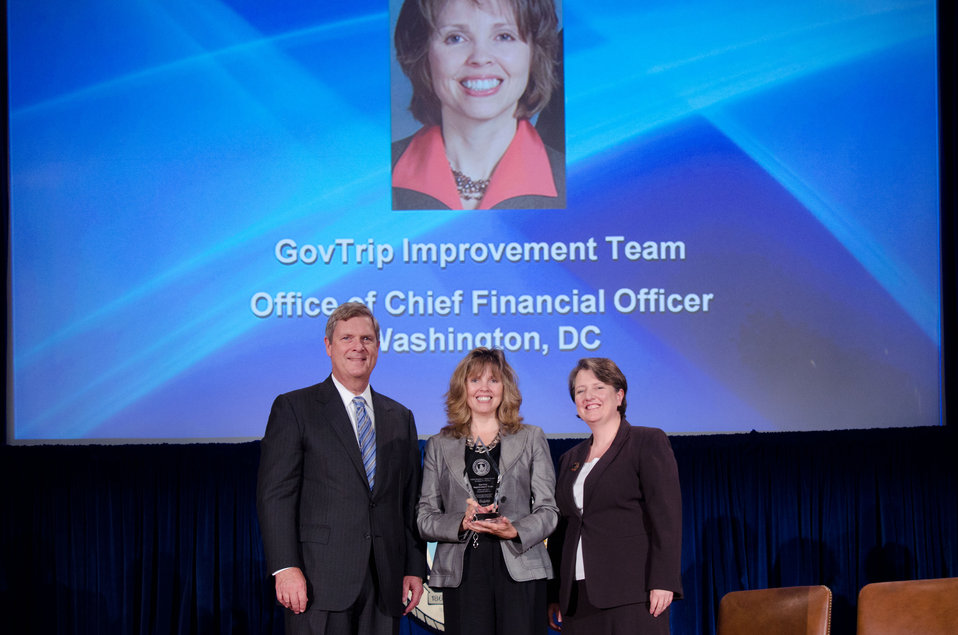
Agriculture Secretary Tom Vilsack (l) and Deputy Secretary Kathleen Merrigan (r), presents the Award to GovTrip Improvement Team, Office of Chief Financial Officer, Washington, DC. Suzette M. Dittrich, Group Leader. For working collaboratively across USDA to increase our ability to manage travel efficiently and effectively; save taxpayers’ dollars; and improve customer satisfaction and employees’ work lives. On Wednesday, September 14, 2011 in the Jefferson Auditorium at the US Department of Agriculture in Washington, DC.